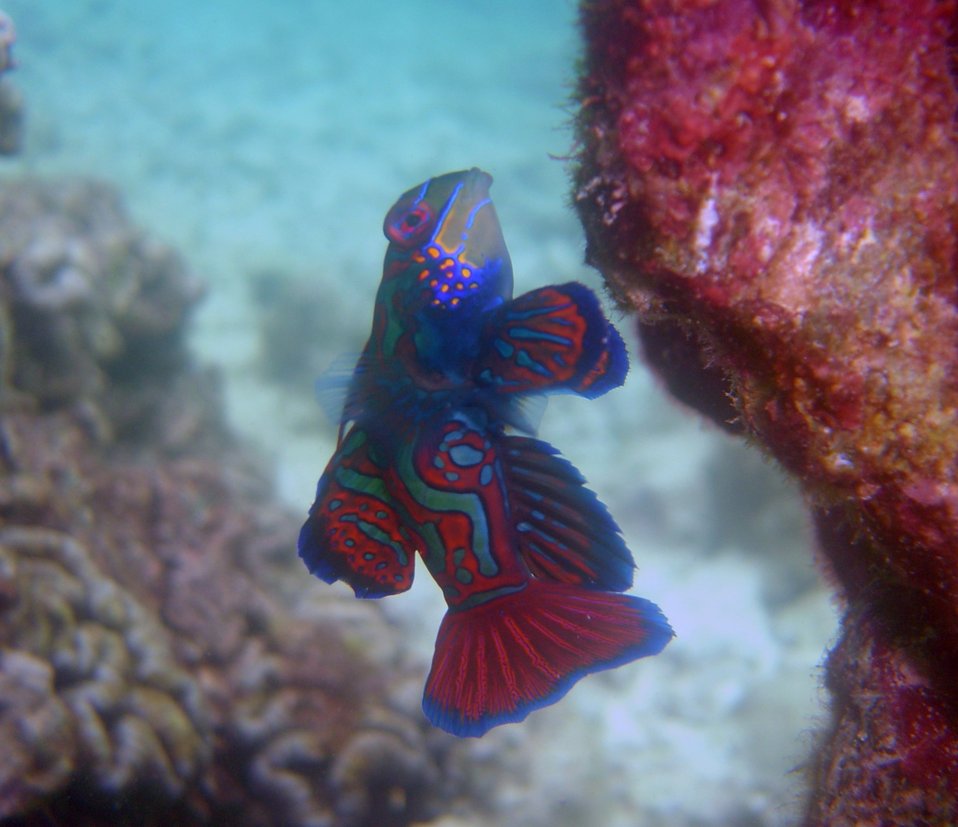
Mandarinfish (Synchiropus splendidus).